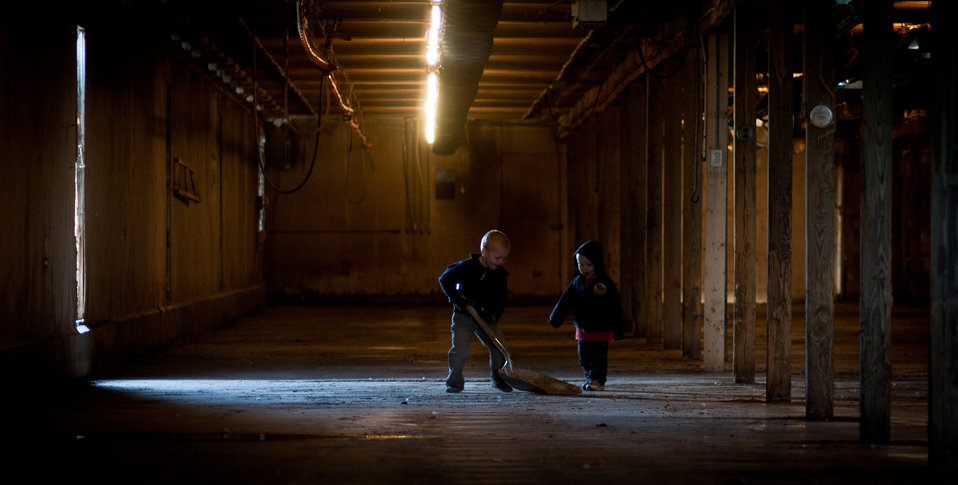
Gavin (2) and Grant Molnar (5) use a shovel to scour the floor for debris at the Roxanne Molnar Farm on April 21, 2011, in Grantville, PA. Roxanne and Matthew Molnar have an 80,000 poultry farm and were recipients of a $20,000 Rural Energy for America Program (REAP) grant. The money is a portion of the cost to modernize the second of two 40,000 chicken capacity chicken houses. Chickens need to be kept at a comfortable temperature to remain productive. New radiant heaters (black linear ceiling mounted unit) keep the chickens warm during Pennsylvania winters in their hilltop location. On warm days, ceiling vents (near the walls) provide passive venting of heat out of the building; when chicken temperatures are estimated to be above 90 degrees, fans come on, pulling air through water evaporator elements (behind black panels on right) that bring air temperature down 10-15 degrees) and flows along the chicken house's length, in effect a tunnel of cooled air. The benefits to the chickens are heat and excess moisture removal; minimized dust and odor; limits buildup of ammonia and carbon dioxide; and provides oxygen for respiration. All these systems are computer controlled allowing owner, Roxanne Molnar to run the farm by herself and raise the two boys. Matthew works off the farm and frequently travels, so along with the demands of parenting and manually controlling fans, vents, and having to remove the 80,000 chickens from their feeders and moving them around to cool them was an increasingly daunting task. The computer controls of the new system automate many of the daylong tasks allowing the Molnars to run their family farm.